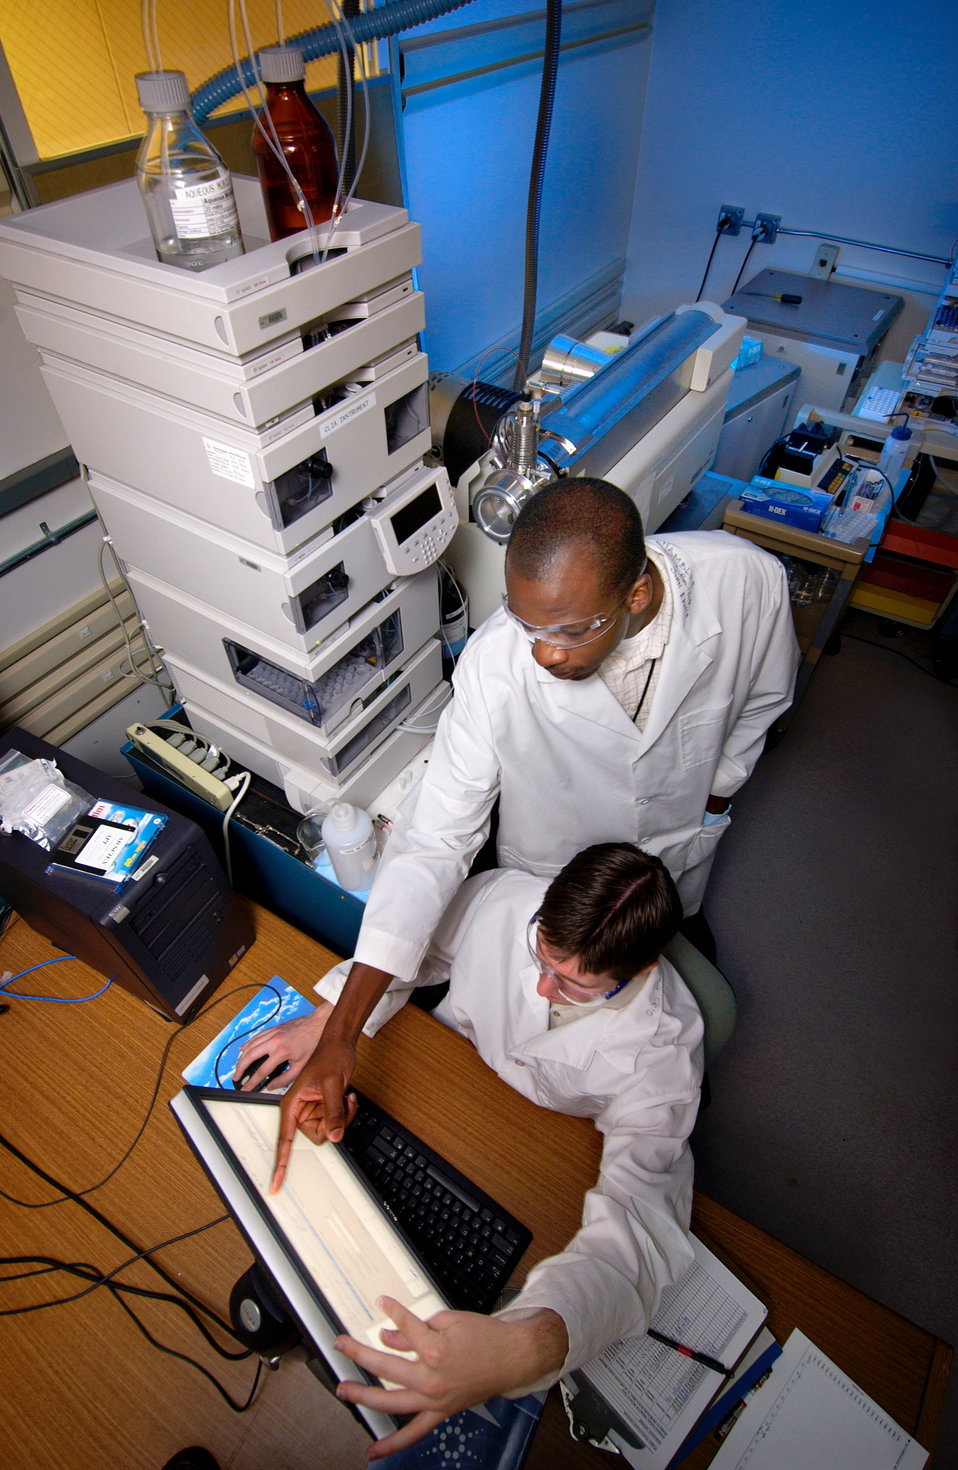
This 2004 photograph showed John Ekong (standing), and Jason Tully as they were analyzing newly acquired data, and discussing laboratory results in the Personal Care Products Laboratory (PCPL) located in a CDC lab on the organization's Chamblee, Georgia campus.